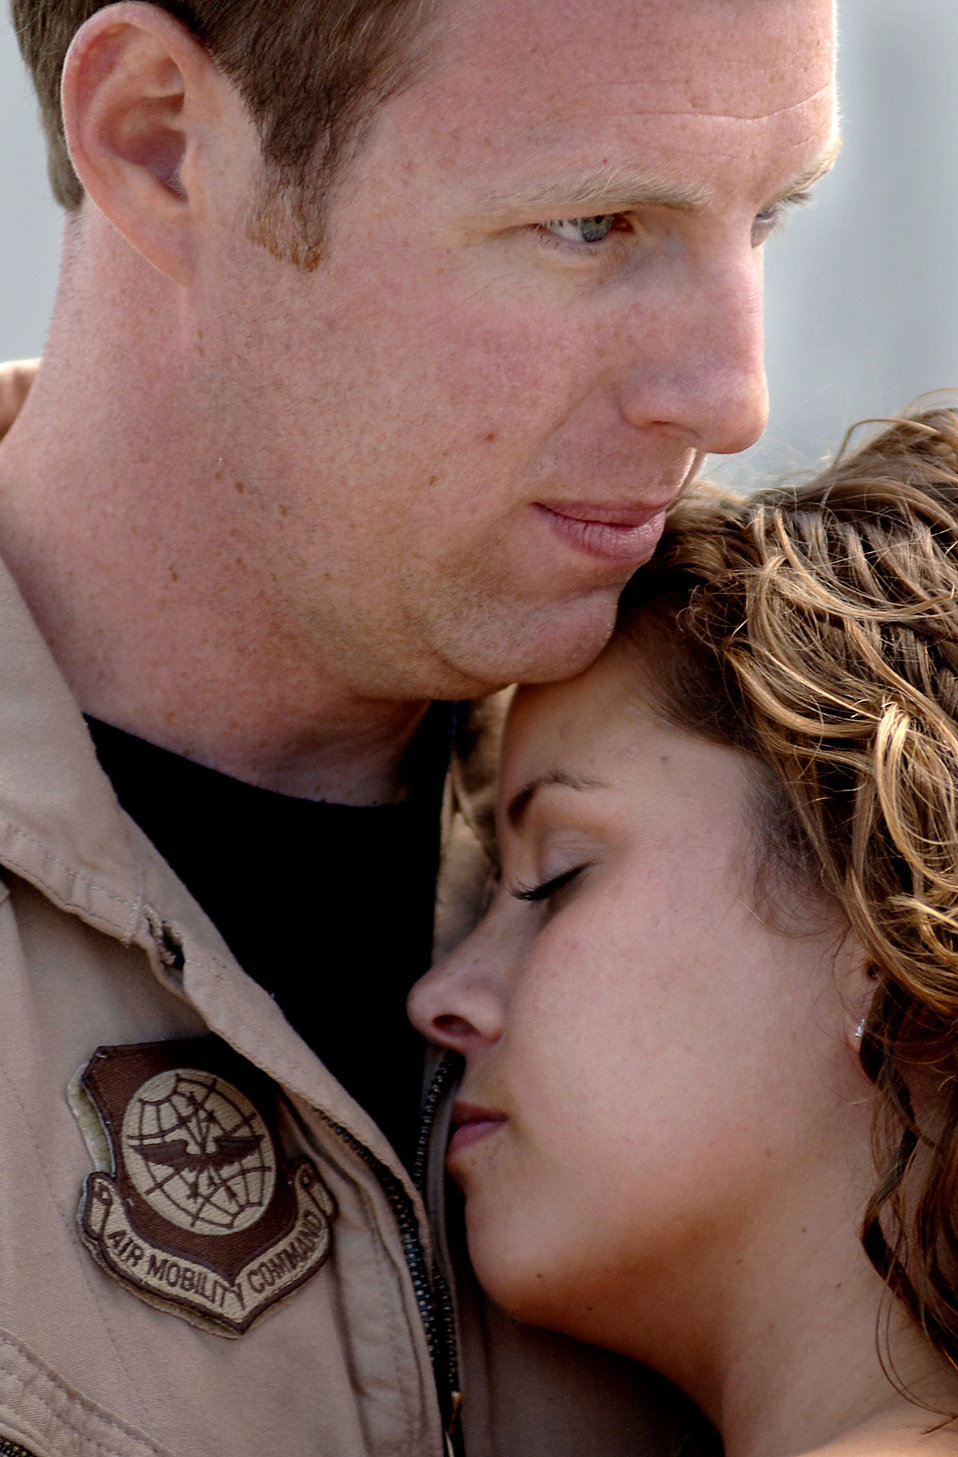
Nothing can be finer than to be in Carolina

Capt. Benjamin Caricofe and his girlfriend, Julia Hughes, are reunited as he returned from a Southwest Asia deployment Sept. 3 to Charleston Air Force Base, S.C. More than 117 Airmen from the 16th Airlift Squadron returned to Charleston AFB after being deployed for more than four months to Southwest Asia. Captain Caricofe is a 16th AS C-17 pilot.